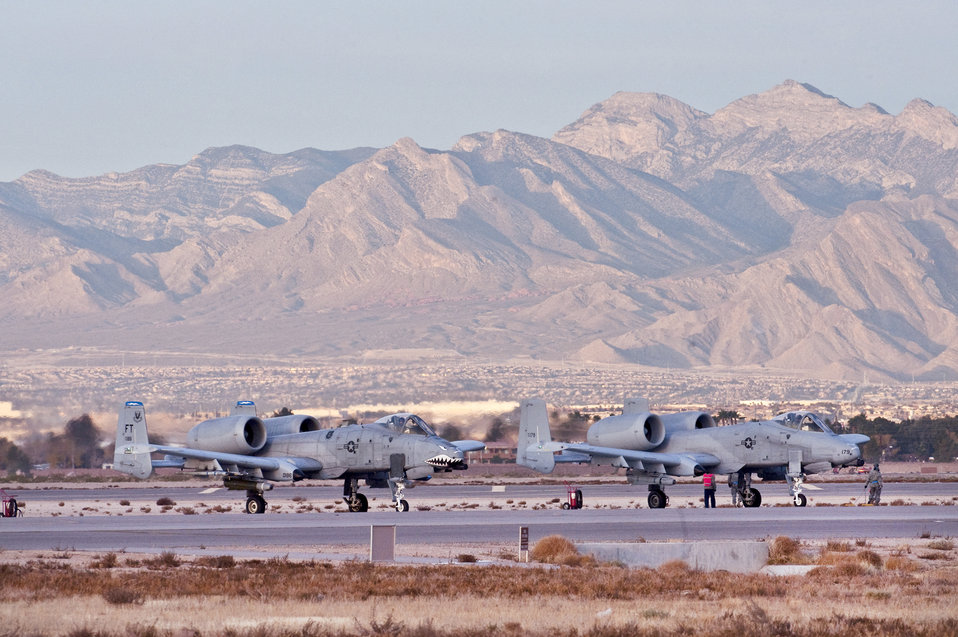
Green Flag West 11-2

Two A-10 Thunderbolt IIs wait at the end of the runway for take-off clearance for a training mission during the Green Flag West 11-2 exercise Dec. 10, 2010, at Nellis Air Force Base, Nev. Green Flag-West provides a realistic air-land integration training environment for forces preparing to support worldwide combat operations. The A-10s are from the 74th Fighter Squadron at Moody AFB, Ga.